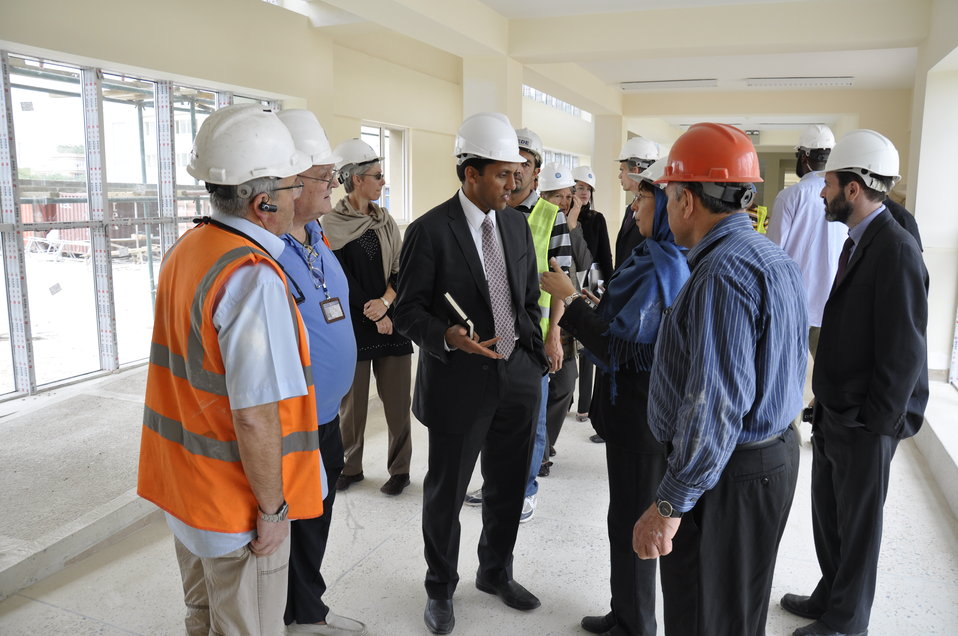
Ghazni High School in Kabul